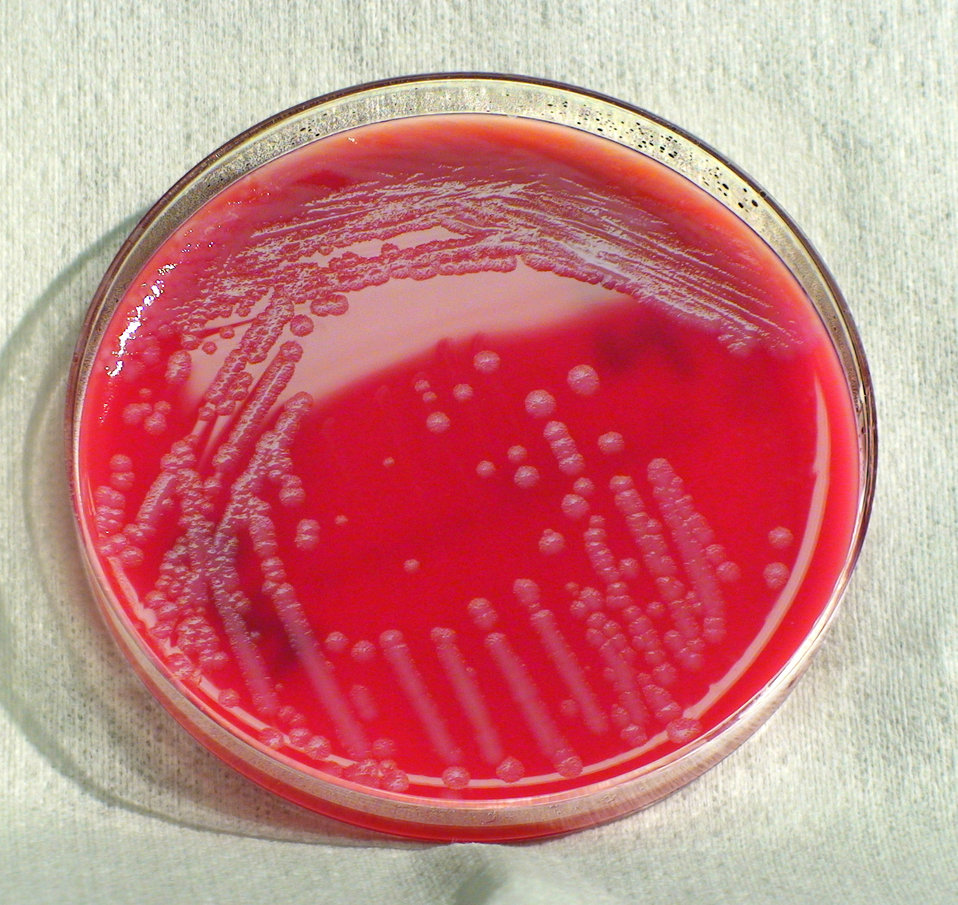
This photograph depicts the colonial morphology displayed by Gram-positive Bacillus licheniformis bacteria, which was grown on a medium of sheep's blood agar (SBA), for a 24 hour time period, at a temperature of 37�C. See PHIL 12484, for a closer view of these bacterial colonies.